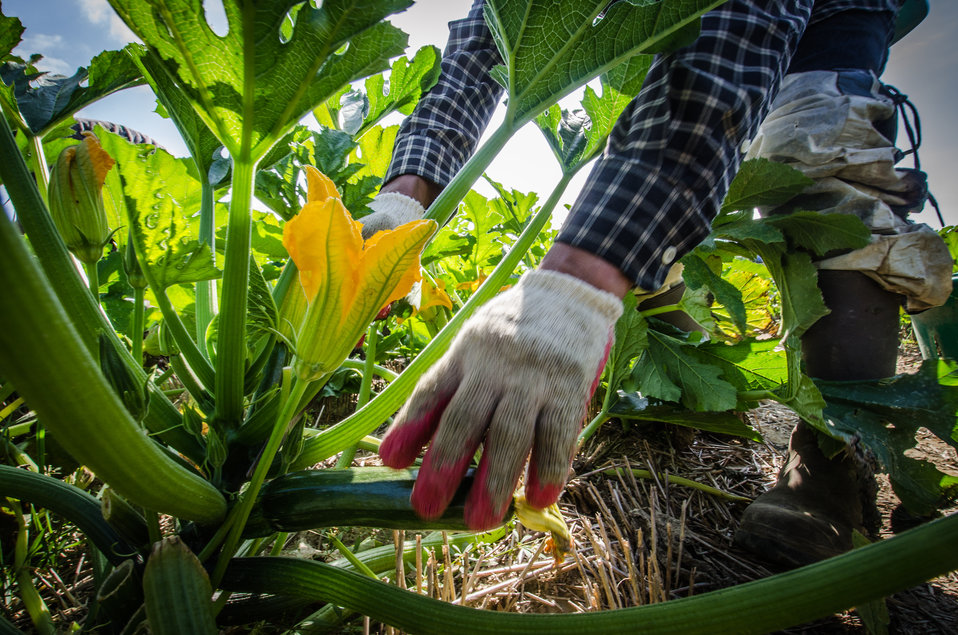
Migrant workers harvest green zucchini squash from rows of plants at Kirby Farms in Mechanicsville, VA on Friday, Sep. 20, 2013. The squash is then transferred to the processing crew for washing and packaging for shipment to wholesalers. Kirby Farms a third-generation family farm that covers 500 acres and generates produce and grains on a year-around operation.